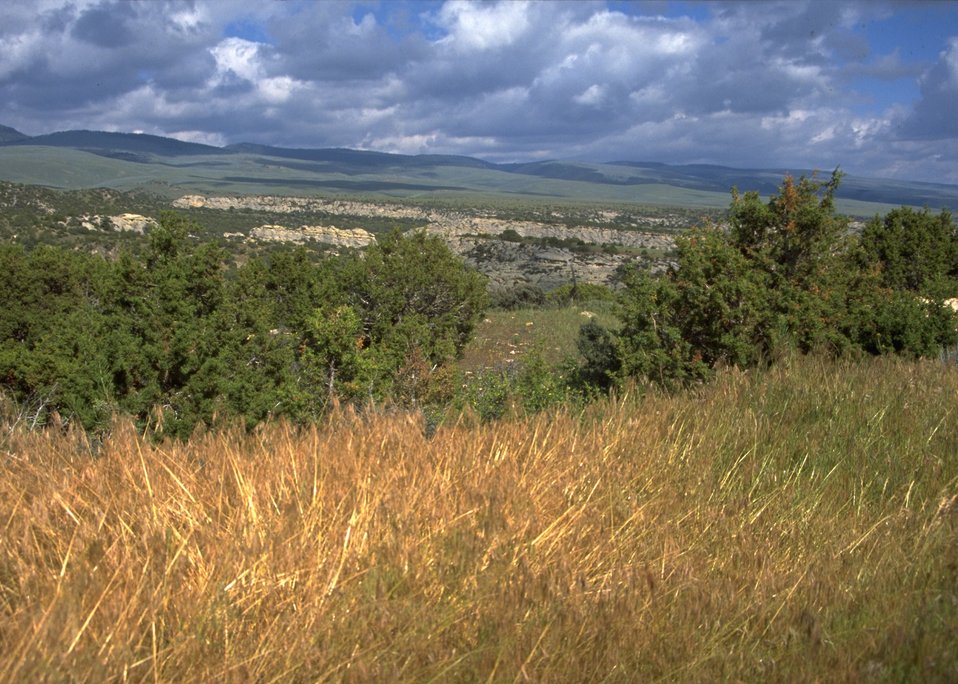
Scenic rock area.